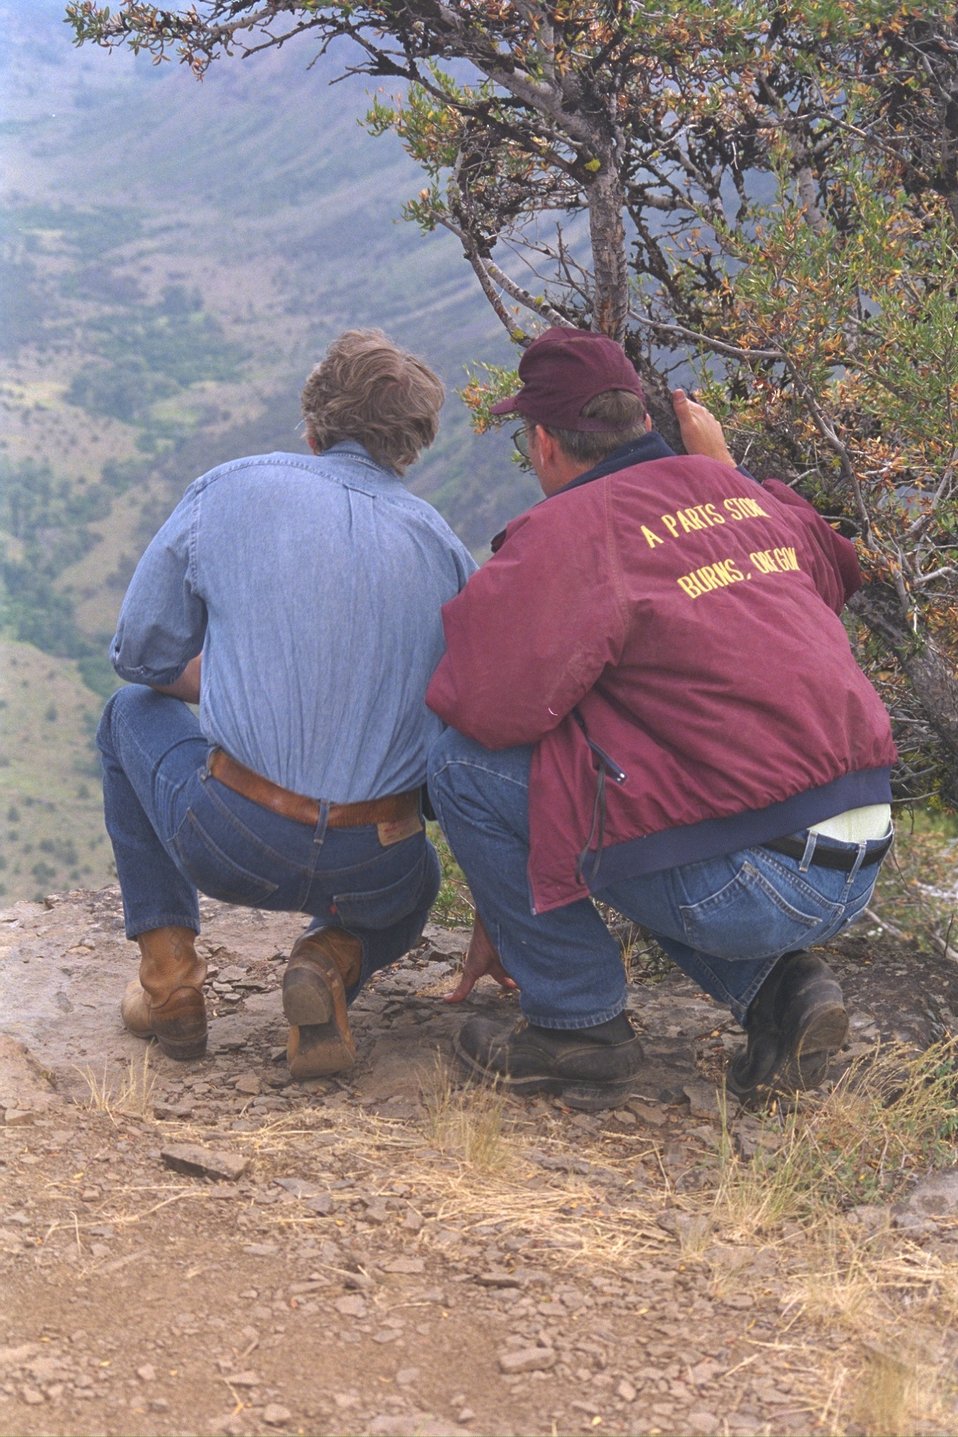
Governor Kitzhaber and Harney County Judge Steve Grosty discuss Steens Designation at Big Indian Gorge.